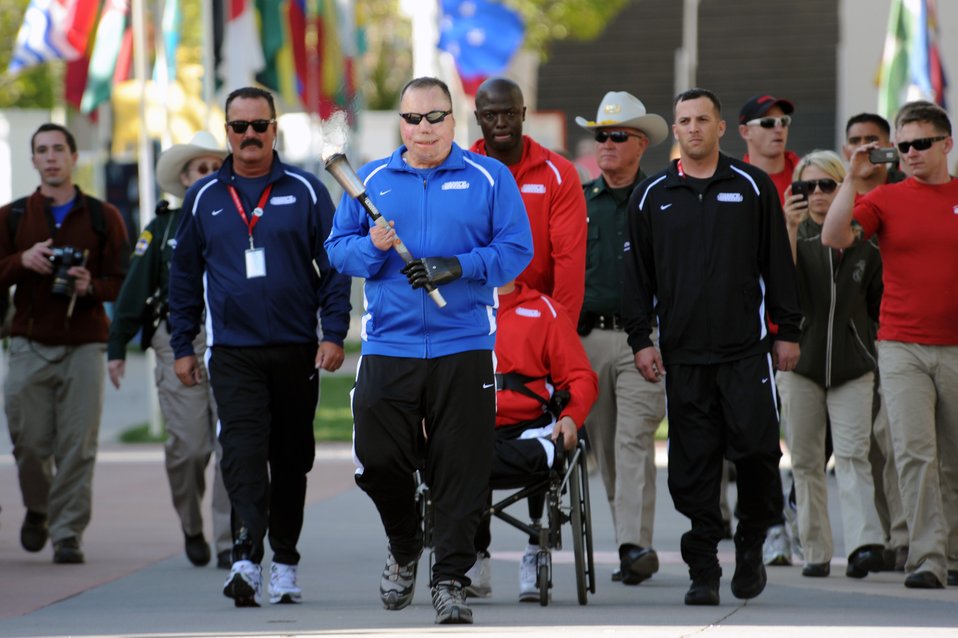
Warrior Games Opening Ceremony

Tech. Sgt. Israel Del Toro carries the Warrior Games torch down Olympic Path for the inaugural Warrior Games May 10, 2010, at the U.S. Olympic Training Center in Colorado Springs, Colo. Sergeant Del Toro is one of some 200 disabled veterans participating in the Paralympic-style competition May 10 through 14.